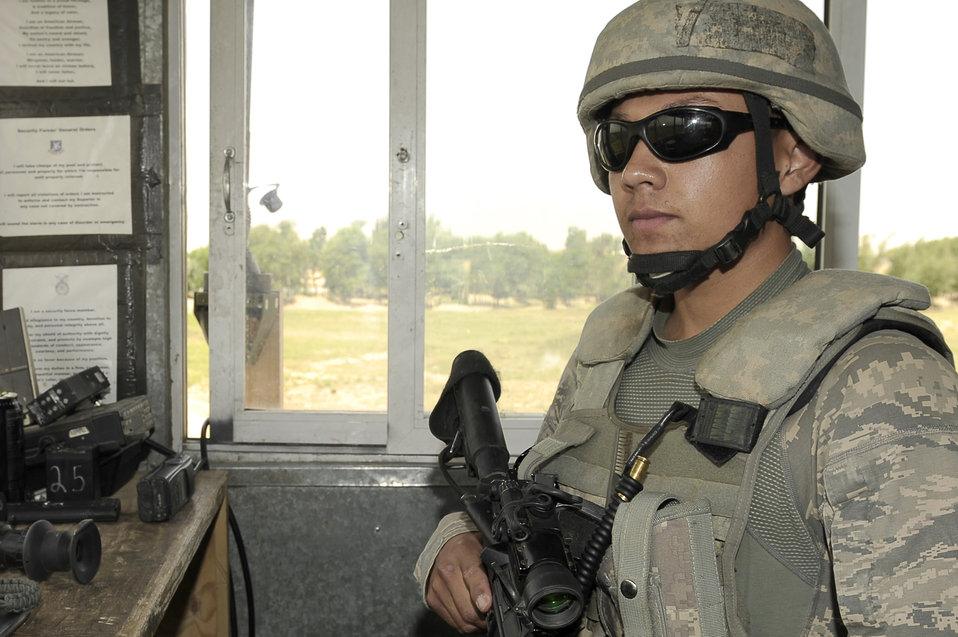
Airmen neutralize threat to Bagram Airfield

Senior Airman Patrick Valentine watches over his sector from a guard tower May 21, 2010, at Bagram Airfield, Afghanistan. Airman Valentine is deployed from Yokota Air Base, Japan, and is from Fresno, Calif. He is assigned to the 455th Expeditionary Security Forces Squadron.